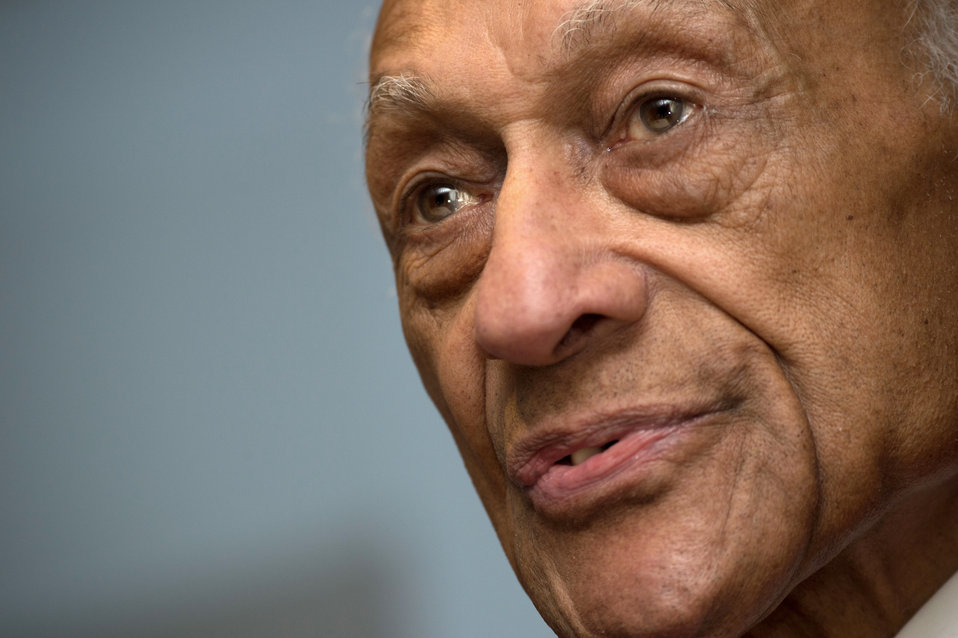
Tuskegee Airmen Incorporated (TAI) National Historian William F. Holton speaks at the U.S. Department of Agriculture's (USDA) Office of the Assistant Secretary for Civil Rights (OASCR) program “In conversation With Tuskegee Airmen”, which honored the airmen’s successes both overseas and at home at USDA in Washington, D.C. on Thursday Mar. 27, 2014. Holton spoke about his experiences in the U.S. Navy. Questions from the audience provided several opportunities for discussion about civil rights challenges and how they achieved success and respect.